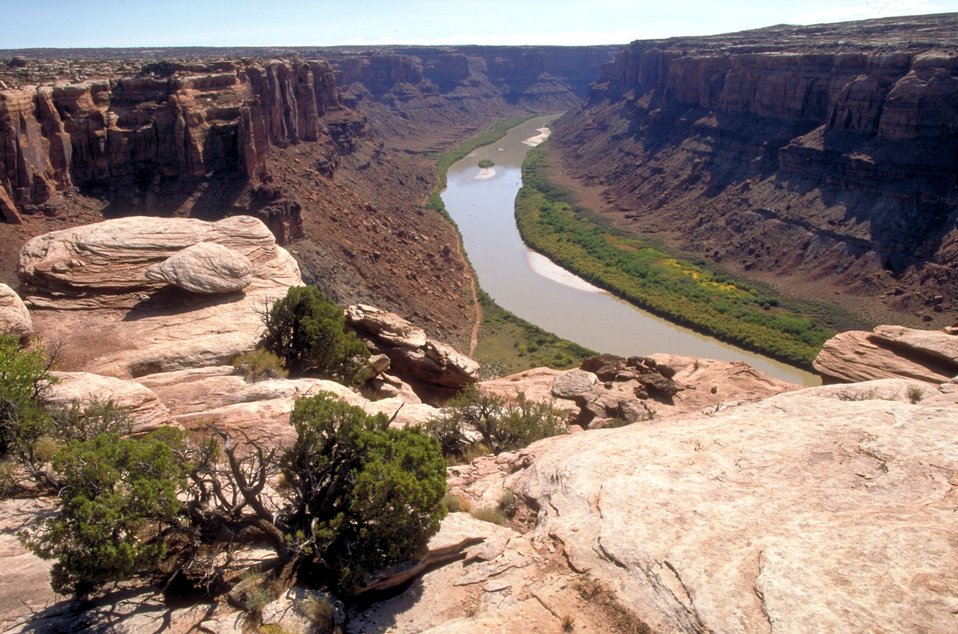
Green River at Bowknot Bend area near Moab, Utah.